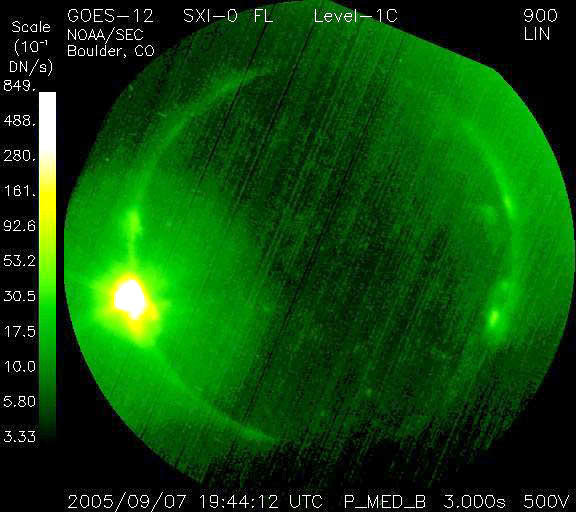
AFWA monitors record solar flare

SATELLITE IMAGE -- Effects from this extreme solar flare recorded Sept 7 could include high-frequency communication disruption and difficulty in satellite communications for the flare's duration.